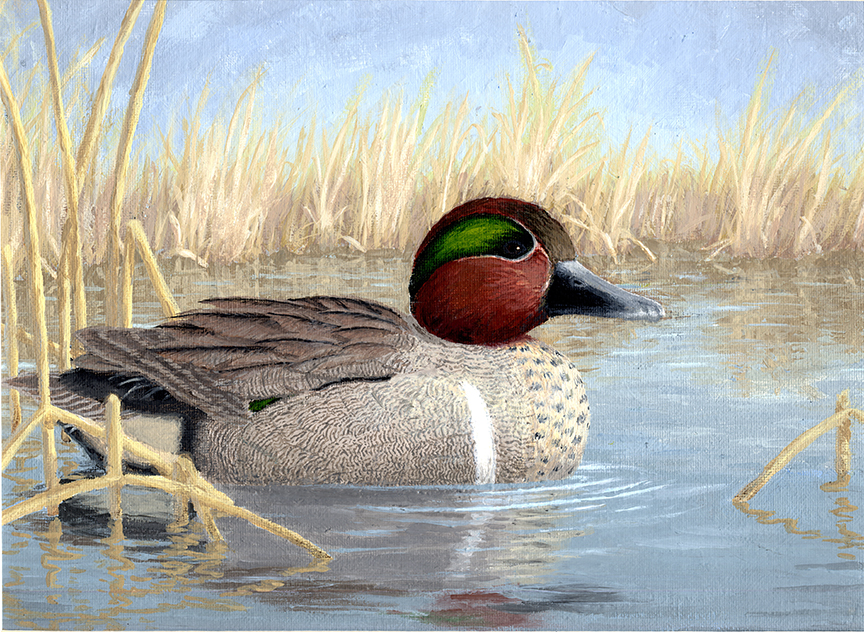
JRDuck2013ID

2013 Junior Duck Stamp Best of Show-Idaho